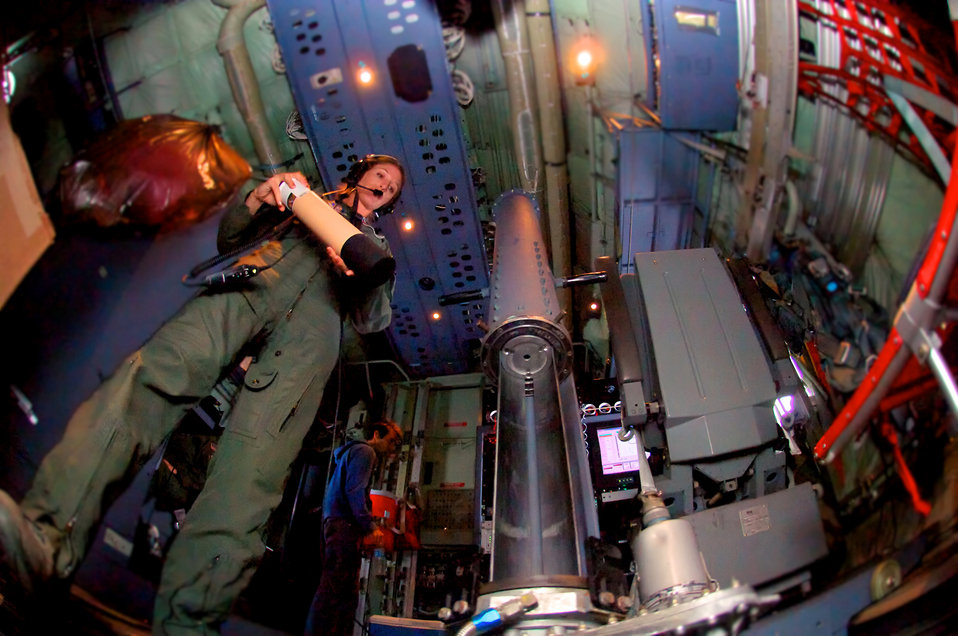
Eye dropper

Tech. Sgt. Amy Lee serves as one of two dropsonde operators Aug. 26, 2011, on board a WC-130J aircraft with the Air Force’s Hurricane Hunters over the Atlantic. The operators launched a series of dropsondes, which are weather reconnaissance devices, out of the bottom of the aircraft via a large tube each time the aircraft entered the eye of the storm. A WC-130J is a modified C-130 Hercules aircraft.